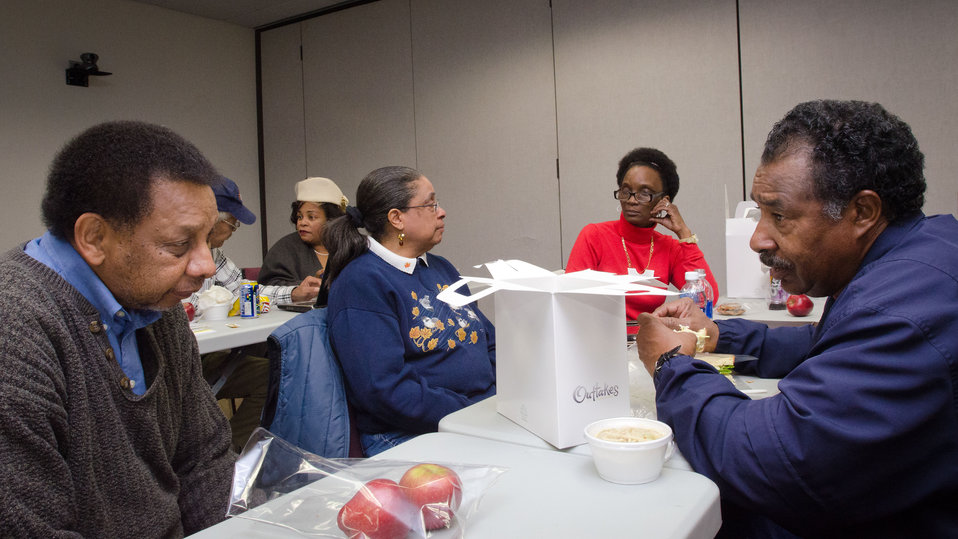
Farmers were able to network during lunchtime at the “Virginia State University (VSU). U.S. Department of Agriculture (USDA) and Virginia Farmers Working Together” outreach workshop in the VSU, L. Douglas Wilder building on Thursday, March 7, 2013, in Petersburg, VA. Farmers shared and learned new ways to do more with their current assets and capabilities, and ways to make their businesses grow and apply for new assets.